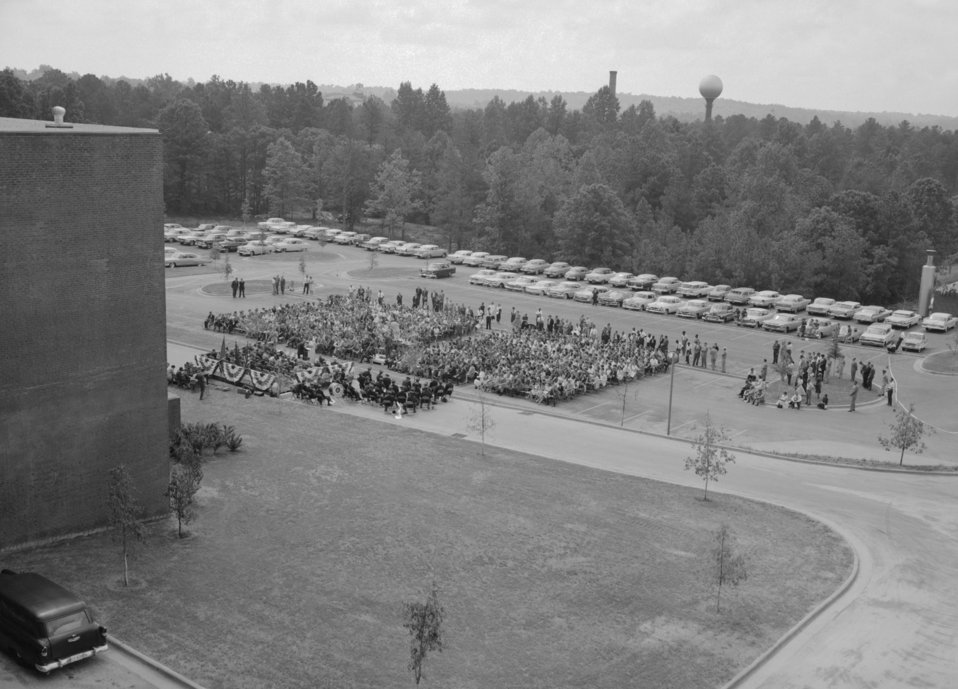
The 1960 CDC Dedication Ceremony with the audience seated behind Bldg. 1.